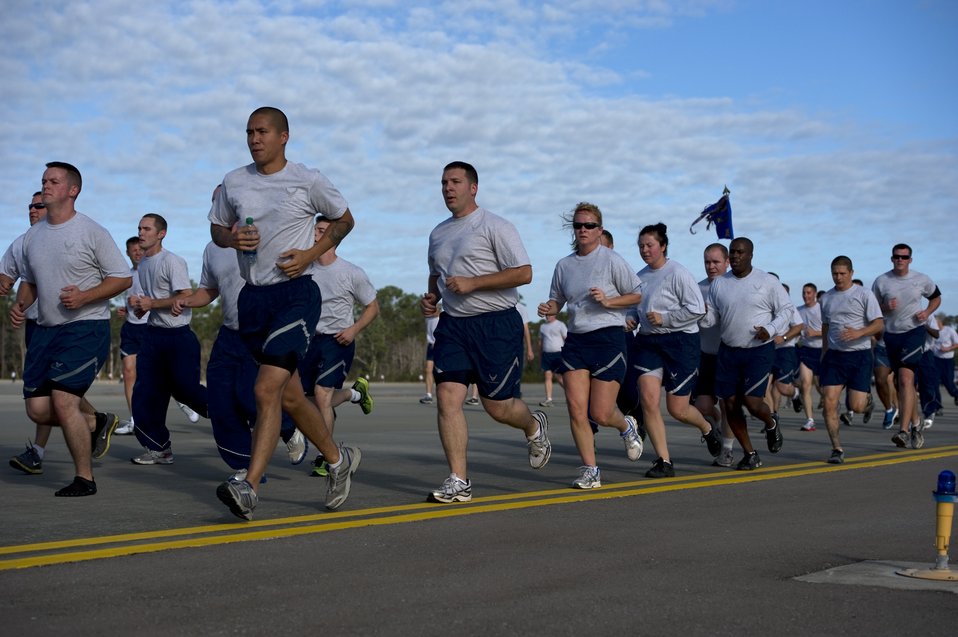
1 SOW Wing Run

U.S. Air Force Airmen take to the flight-line pavement during the 5 km base-wide run, Hurlburt Field, Fla., Nov. 7, 2011. Air Force Special Operations Command Airmen ran as one team to promote unity among the base.